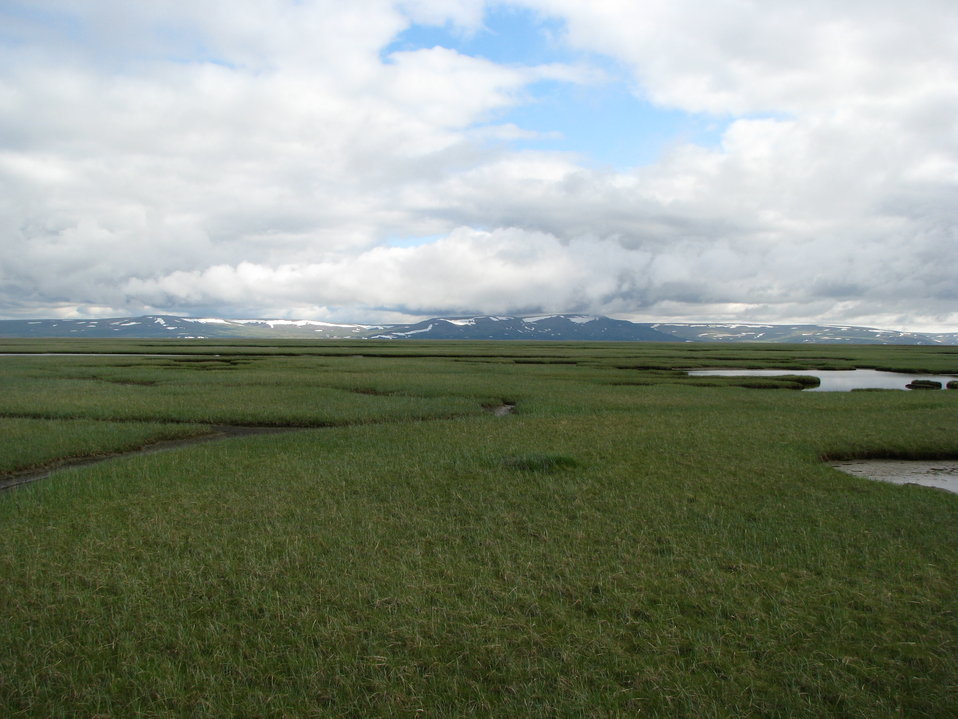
Summer on the coast

Yukon Delta NWR
Late July on the coast